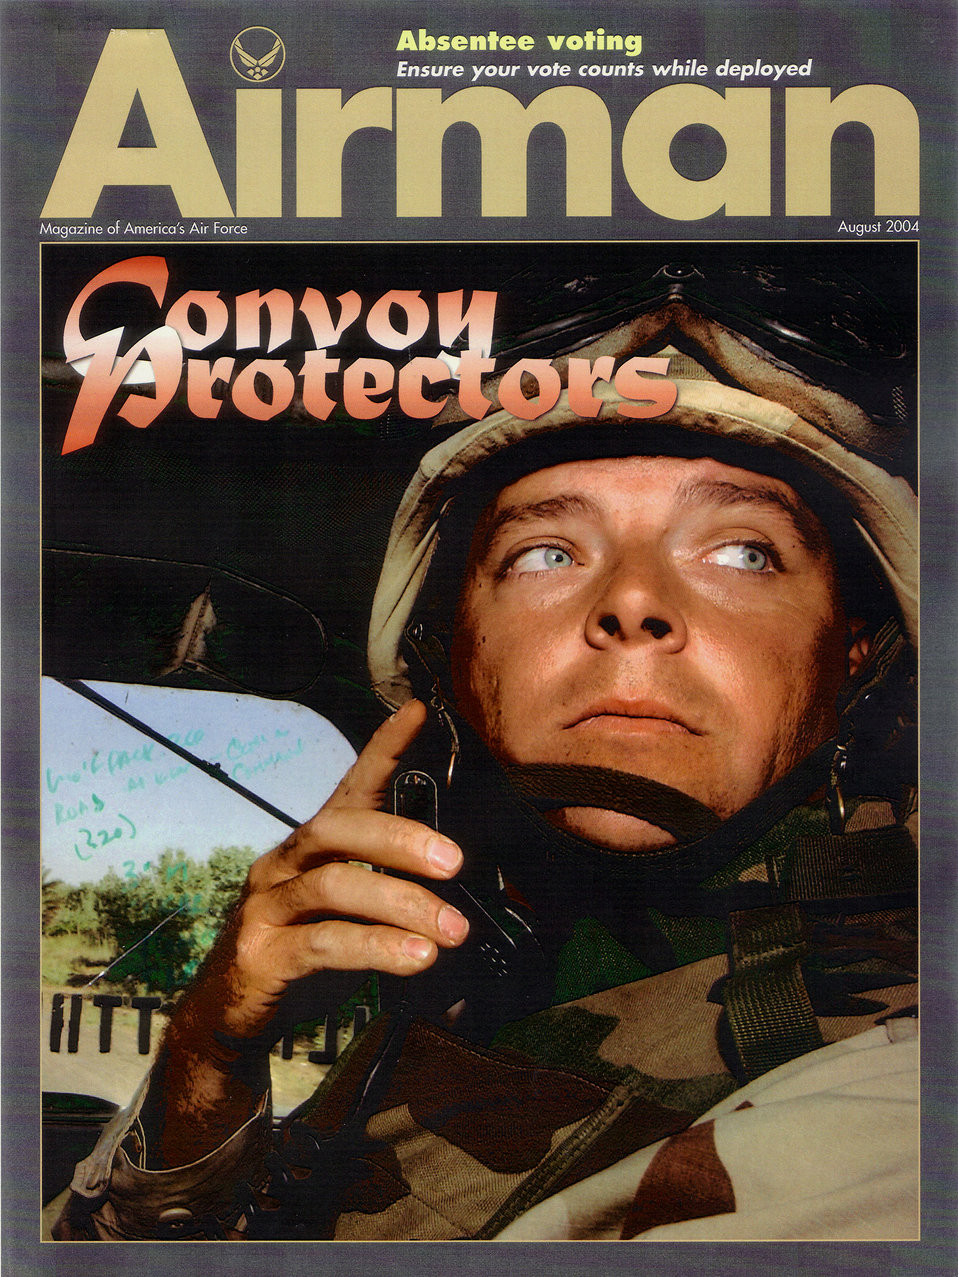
Course trains Airmen to drive for Army in Iraq

SAN ANTONIO -- An expanded story on the course that trains Airmen to drive for the Army in Iraq will be featured in the August issue of Airman magazine.